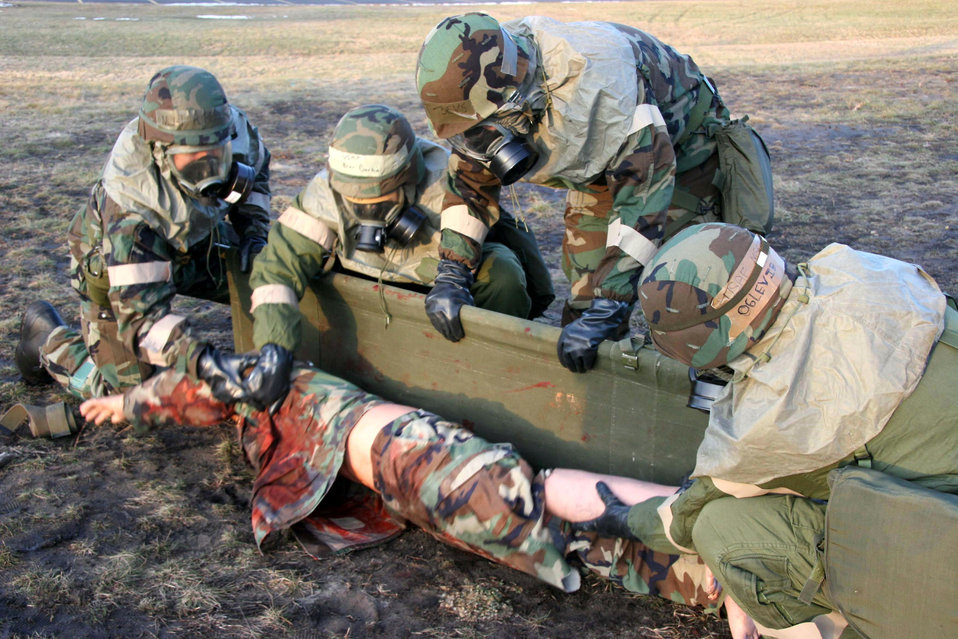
Litter team

VOLK FIELD AIR NATIONAL GUARD BASE, Wis. (AFPN) -- After a simulated attack, members of the 939th Air Refueling Wing's litter team recover a